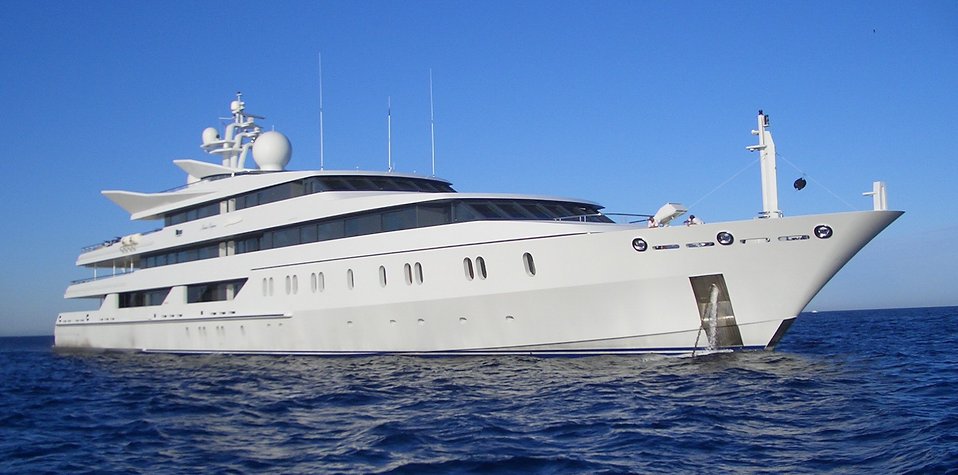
Indian Empress at sea Français : L'Indian Empress en mer